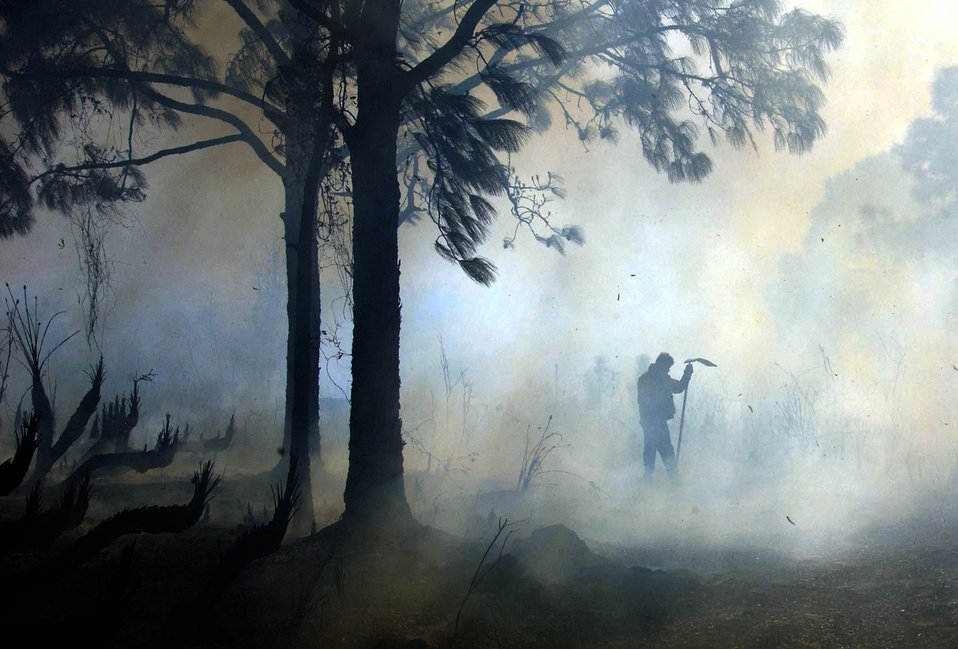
Smoldering control

MACDILL AIR FORCE BASE, Fla. -- Jason Kirkpatrick, a contractor with the 6th Civil Engineer Squadron, ensures the prescribed burn is under control here. The purpose of the prescribed burn was to reduce the possible dangers that a wildfire can produce.